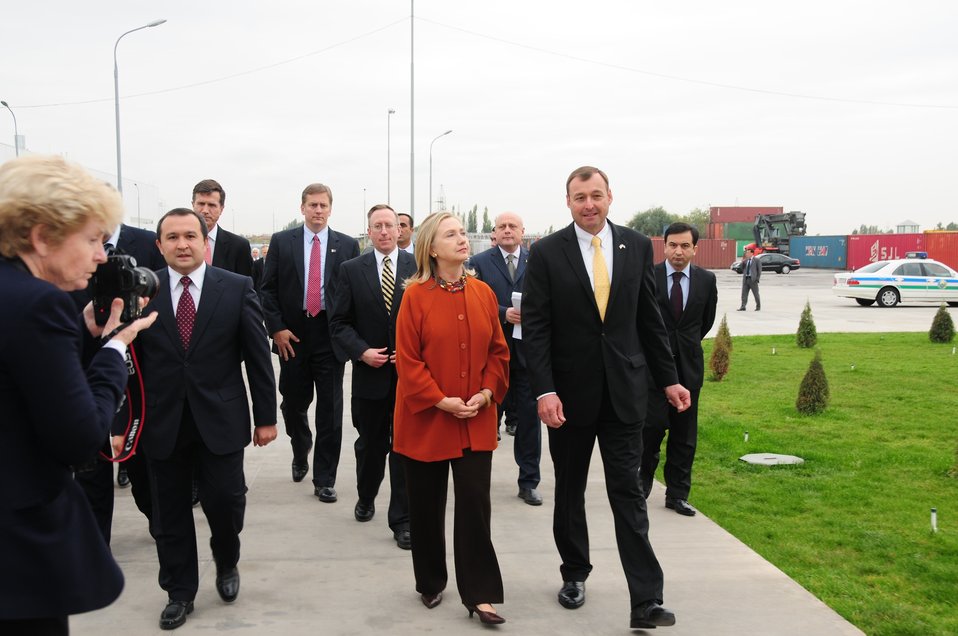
Uzbek Deputy Prime Minister Rozukulov, Secretary Clinton, and GM Uzbekistan General Director Spendel Arrive at the GM FactorySecretary Clinton,

Uzbek Deputy Prime Minister Ulugbek Rozukulov, left; U.S. Secretary of State Hillary Rodham Clinton, center; and General Motors (GM) Uzbekistan General Director Juergen Spendel arrive at the GM factory in Tashkent, Uzbekistan, on October 23, 2011.